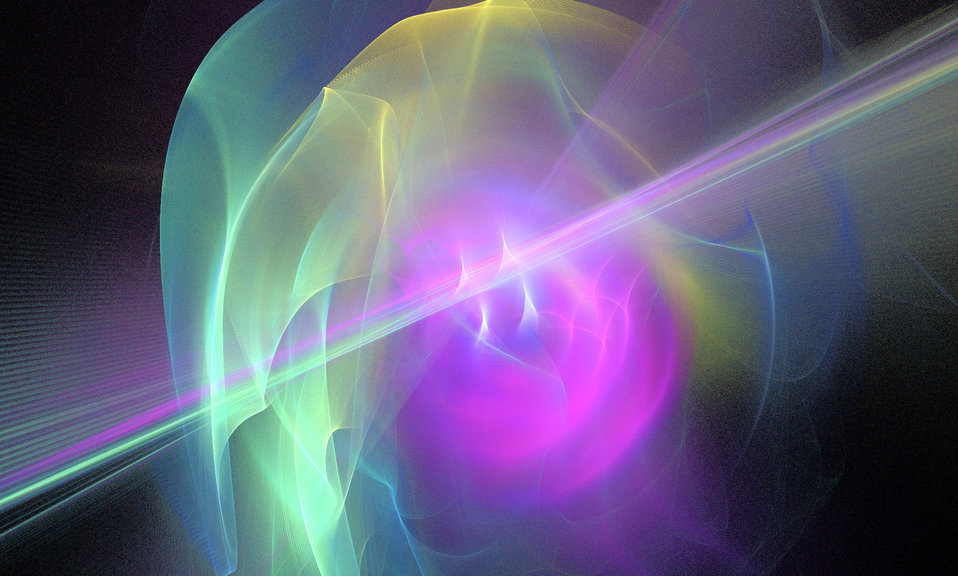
Blue flames

Pretty fractal in various colours.